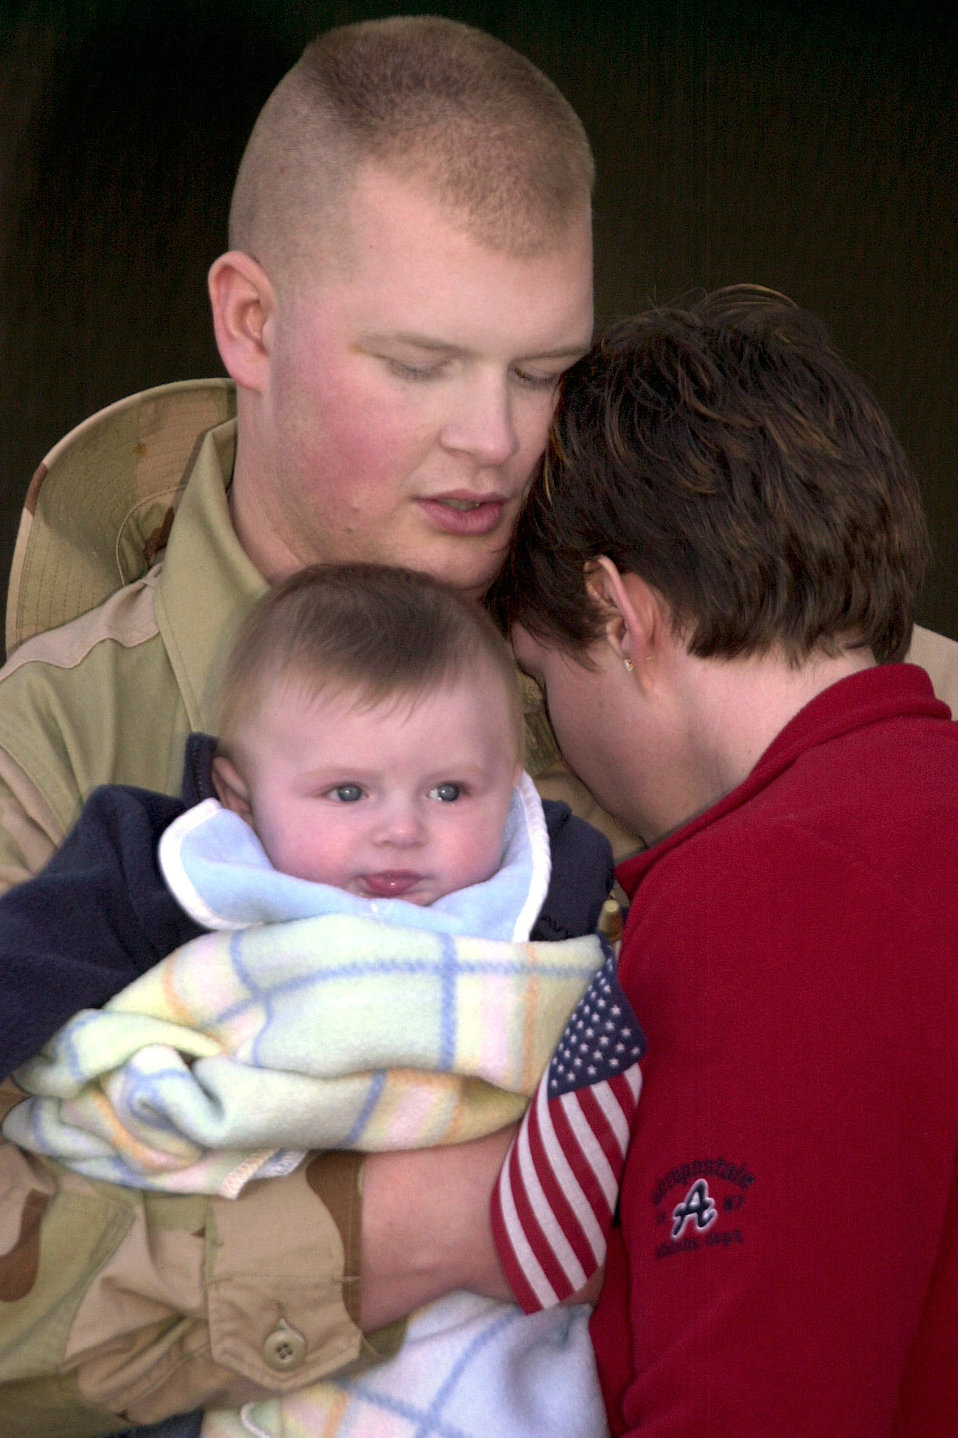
I'll be back soon

NIAGARA FALLS, N.Y. -- Family members say farewell to an airman departing here to support Operation Iraqi Freedom. Members of the 107th Air Refueling Wing, New York Air National Guard, recently deployed to support the war in Iraq.